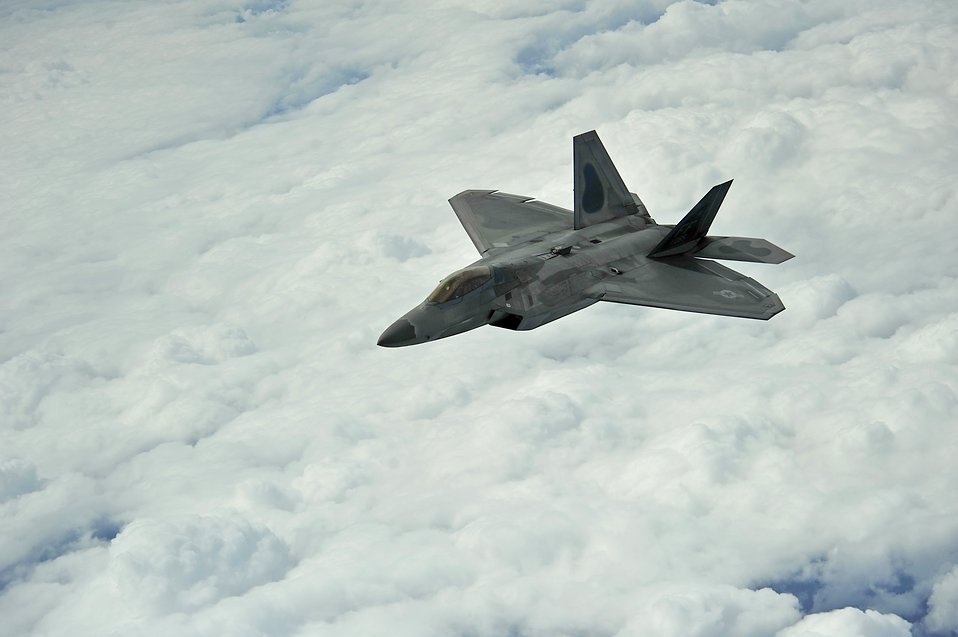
F-22 Raptor

A 1st Fighter Wing's F-22 Raptor from Joint Base Langley-Eustis, Va. pulls away from a KC-135 Stratotanker with the 756th Air Refueling Squadron, Joint Base Andrews Naval Air Facility, Md. after refueling off the east coast on May 10, 2012. The first Raptor assigned to the Wing arrived Jan. 7, 2005. This aircraft was allocated as a trainer, and was docked in a hanger for maintenance personnel to familiarize themselves with its complex systems. The second Raptor, designated for flying operations, arrived Jan. 18, 2005. On Dec. 15, 2005, Air Combat Command commander, along with the 1 FW commander, announced the 27th Fighter Squadron as fully operational capable to fly, fight and win with the F-22. (U.S. Air Force Photo by: Master Sgt. Jeremy Lock)